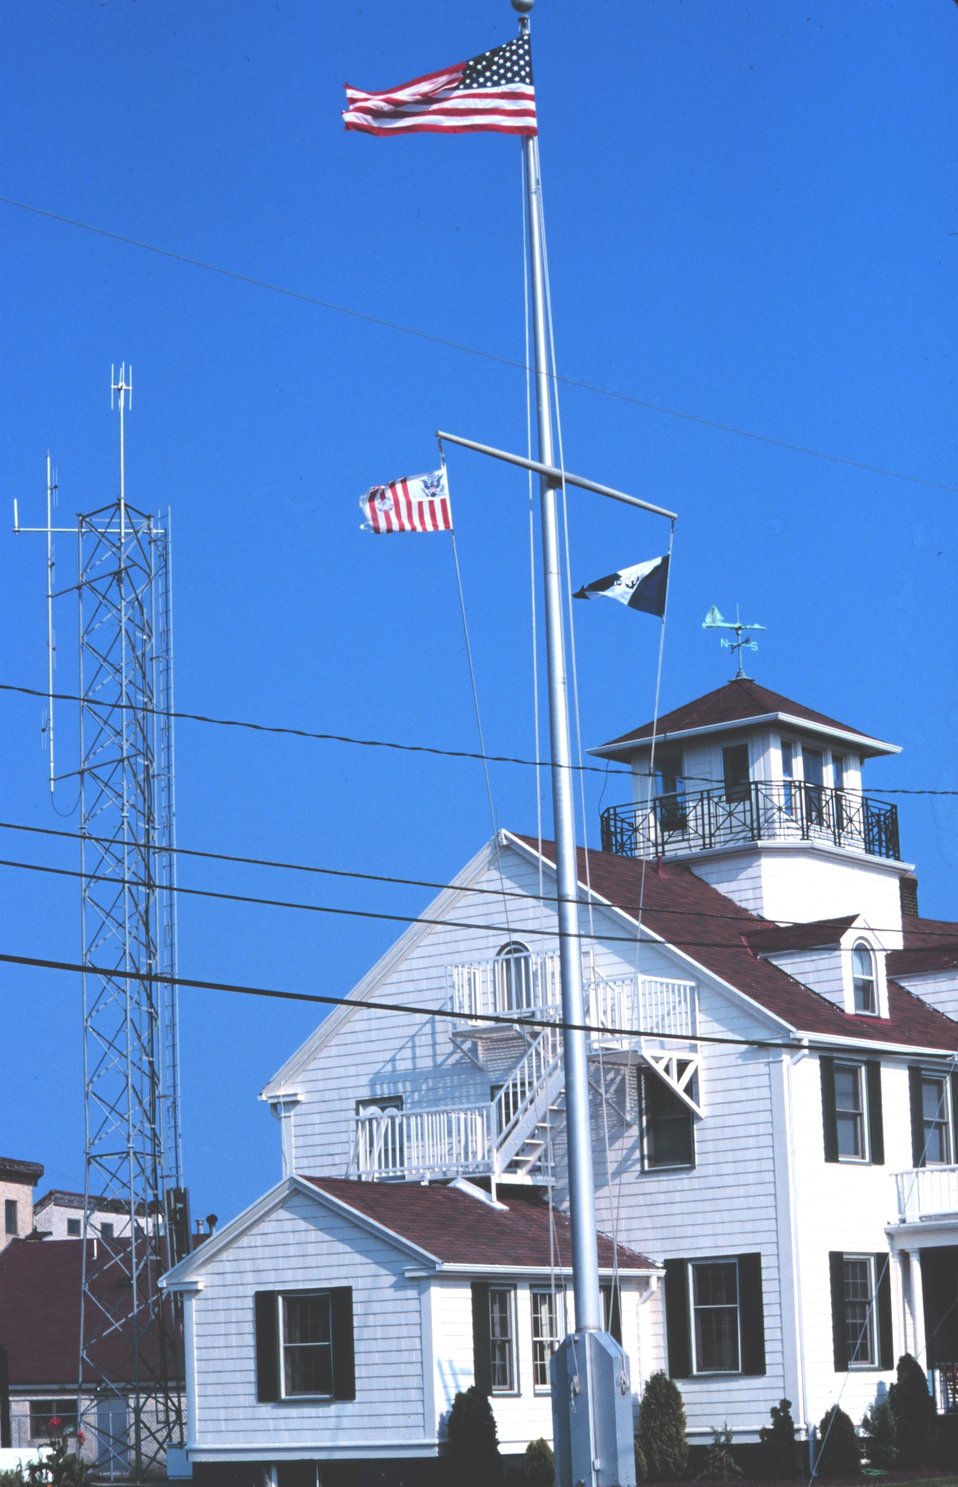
The U. S. Coast Guard Station